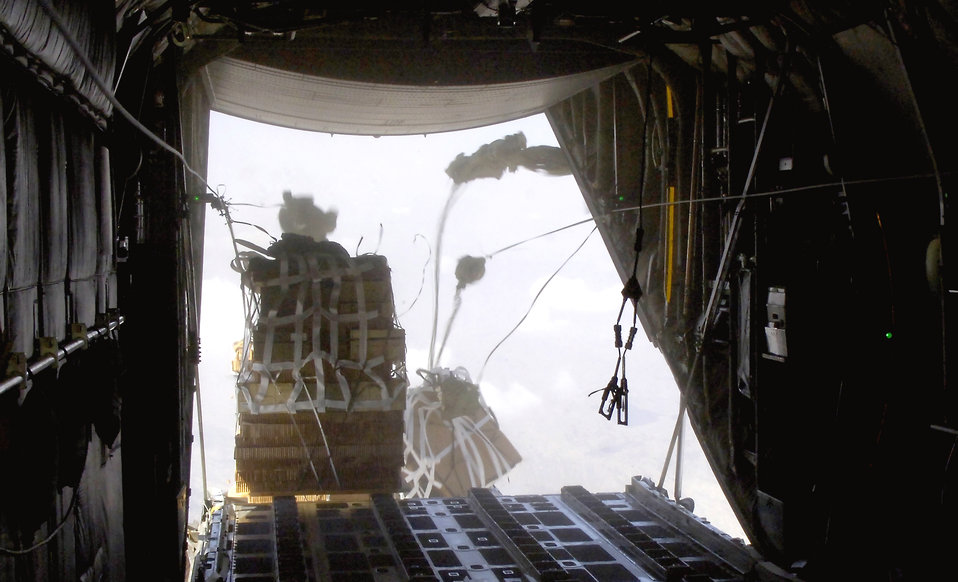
Bagram C-130s drop high-tech cargo delivery system

Joint Precision Air Drop System bundles fall out of the back of a C-130 Hercules Aug. 25. The drop was made from almost 10,000 feet above sea level and was calculated using up-to-the-minute wind data relayed from two small dropsondes deployed 20 minutes earlier. The dropsondes calculate wind speed and relay the information back to the aircraft, helping to calculate the correct drop point.